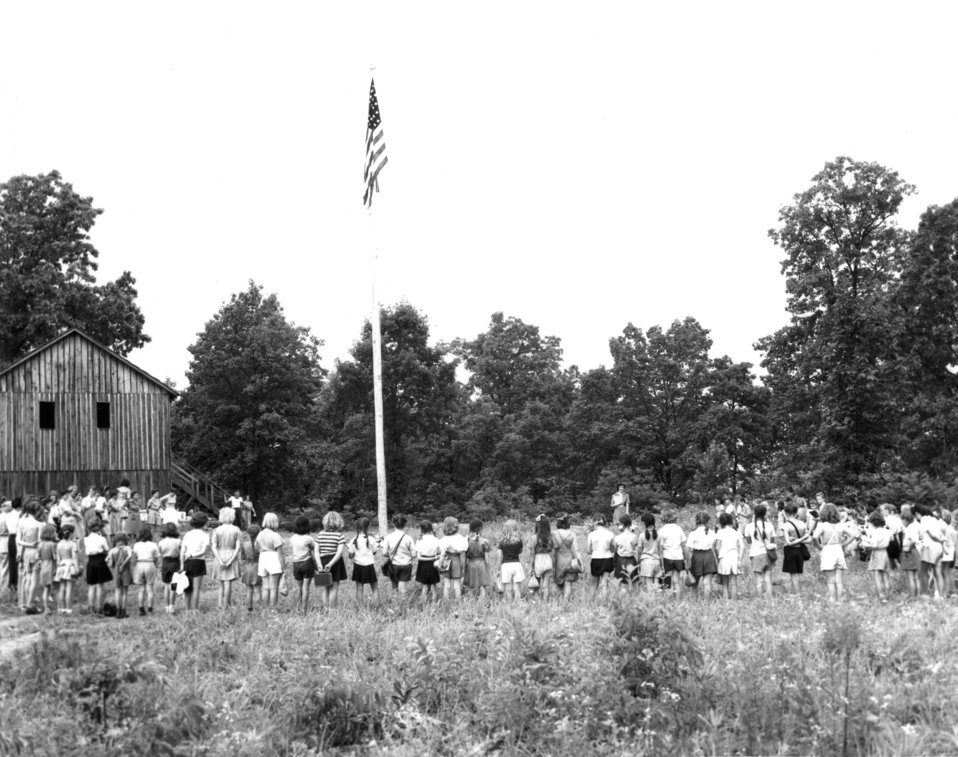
Daily Life at Oak Ridge